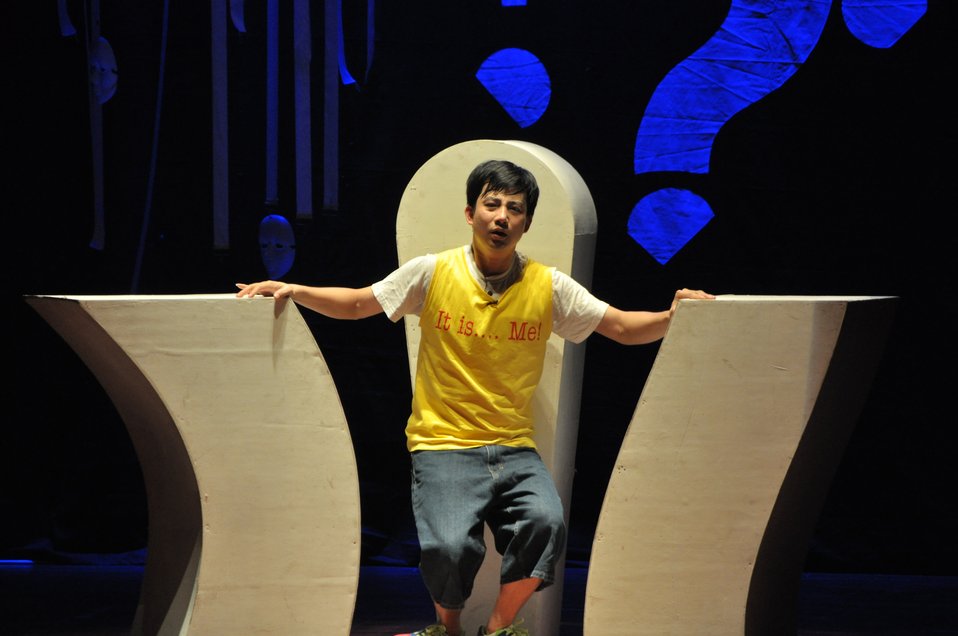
PEPFAR Musical Questions and Exclamations

Hanoi, May 17, 2013